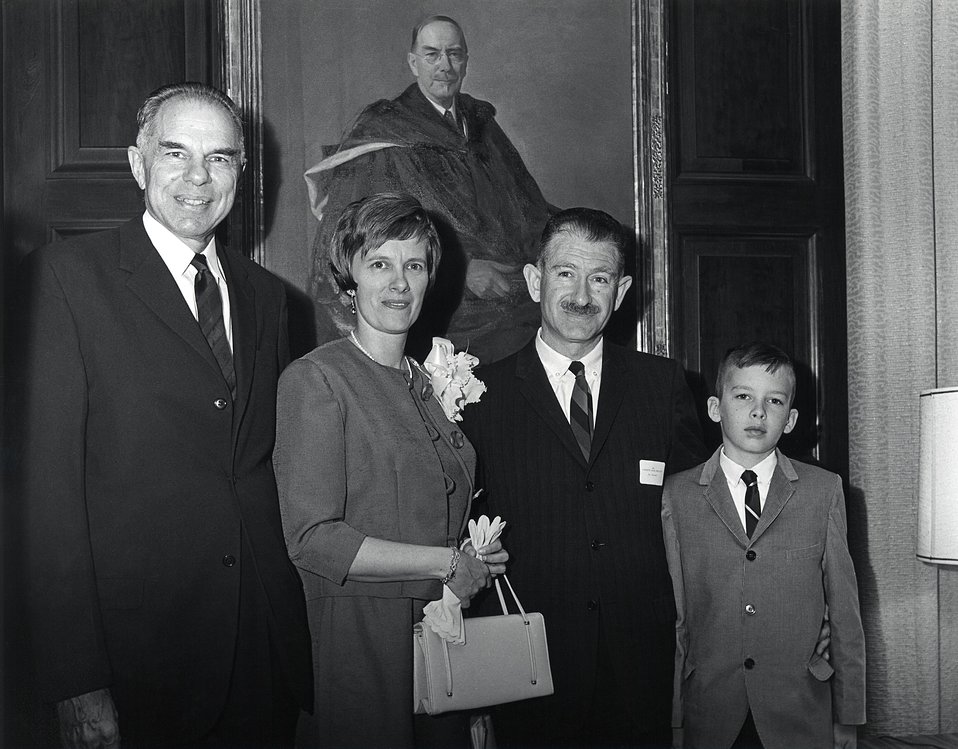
E.O. Lawrence Awards, 1967. Carnegie Institution Auditorium - Dr. Mortimer M. Elkind, Chairman Seaborg.